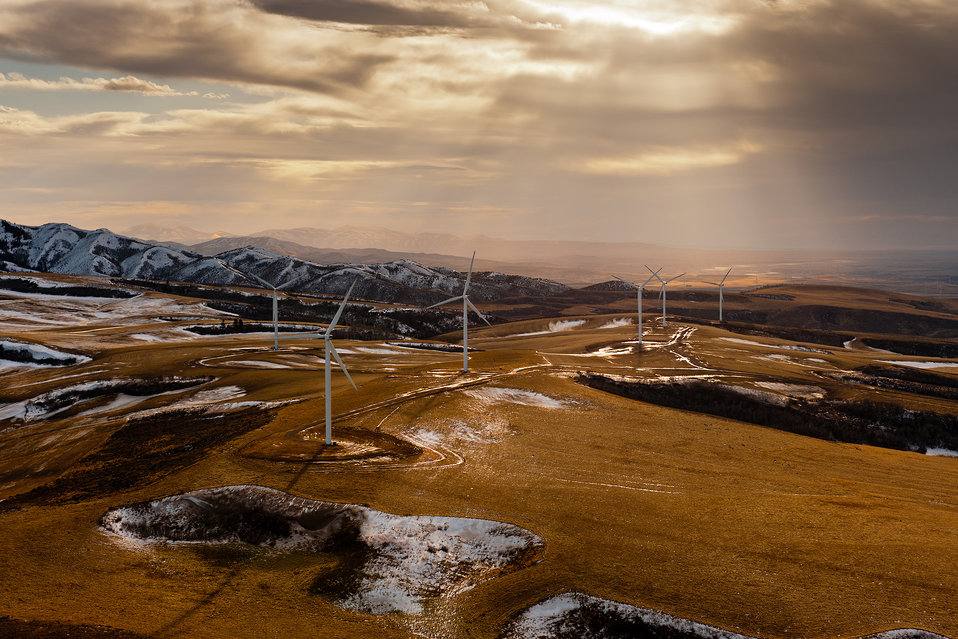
Power County Wind Farm - Power County, Idaho.